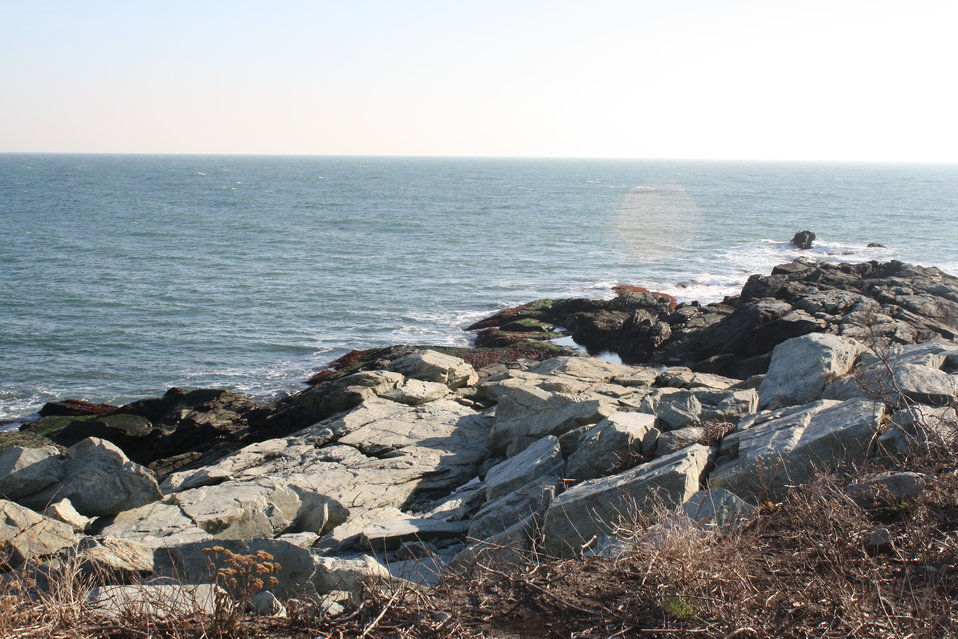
Viewing damage at Sachuest Point (RI)

A view from the new Price Neck Overlook trail at Sachuest Point National Wildlife Refuge. While conducting damage assessments after Hurricane Sandy, refuge staff had to re-route the trail due to dangerous drop-offs that formed after the storm.